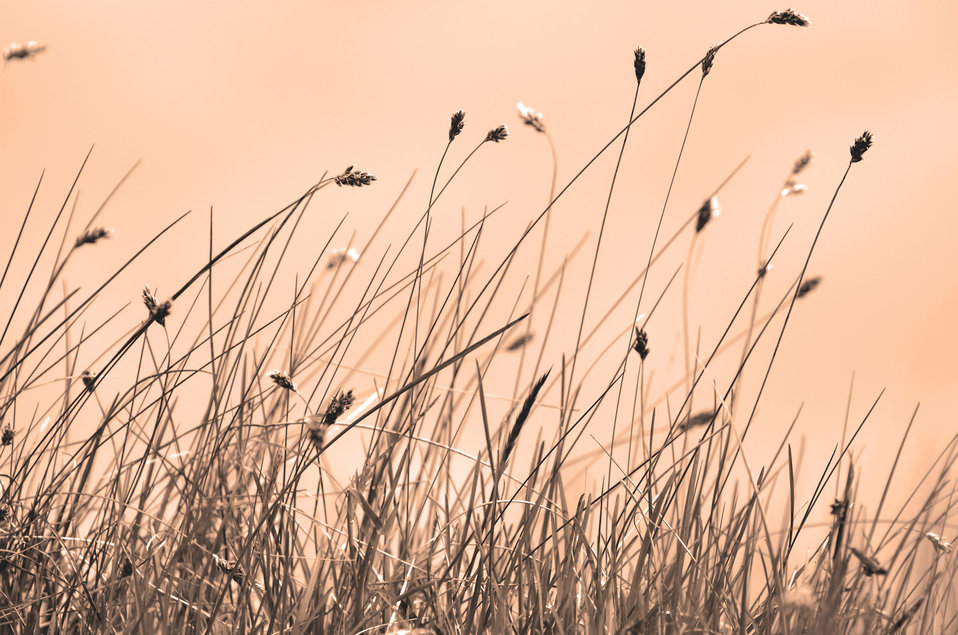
Dry grass - nature.